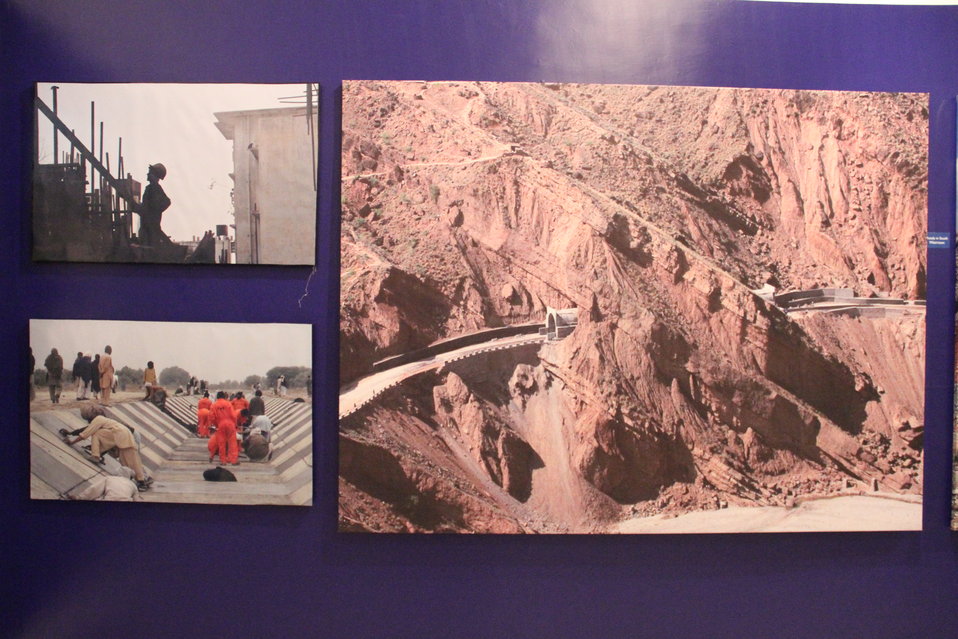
Photo Exhibition Celebrate US-PAK Cooperation at PNCA, Islamabad on April 13, 2012

Photo Exhibition